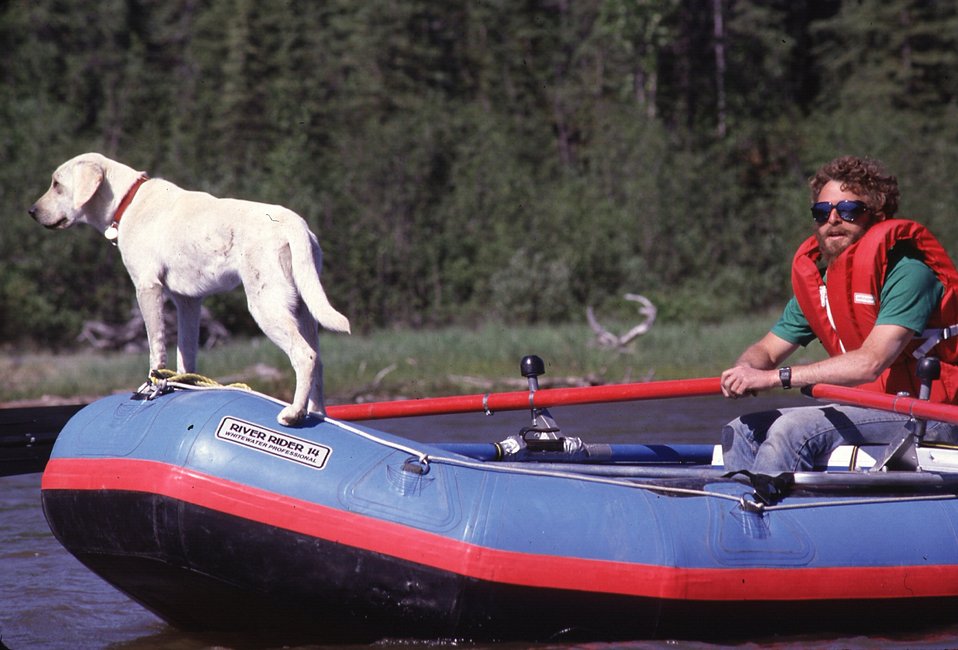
Dog on raft, Gulkana NWSR